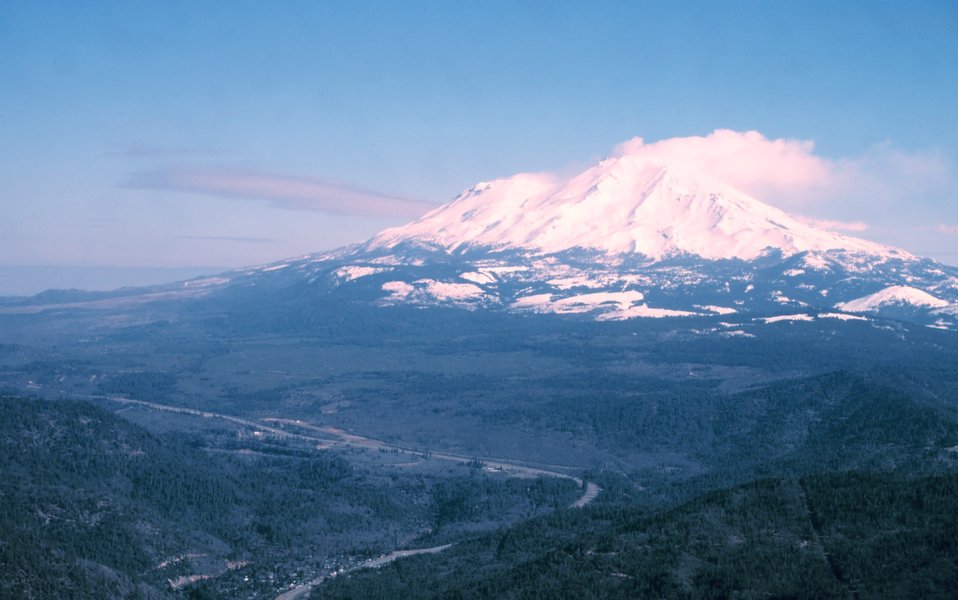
Mount Shasta, one of the great stratovolcanoes of the Pacific Ring of Fire, looms over small town on Interstate 5.